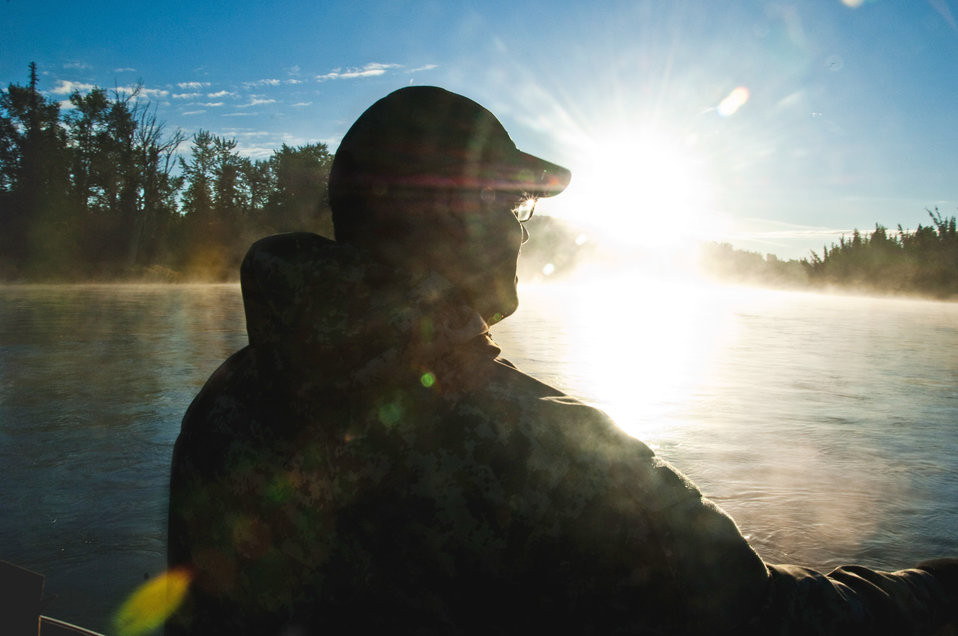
Alaska's Healing Waters

Petty Officer 1st Class Emilio Rodriguez takes in the scenery during a chartered fishing trip Sept. 11, 2010, on the Kenai River, Alaska as a part of Project Healing Waters.